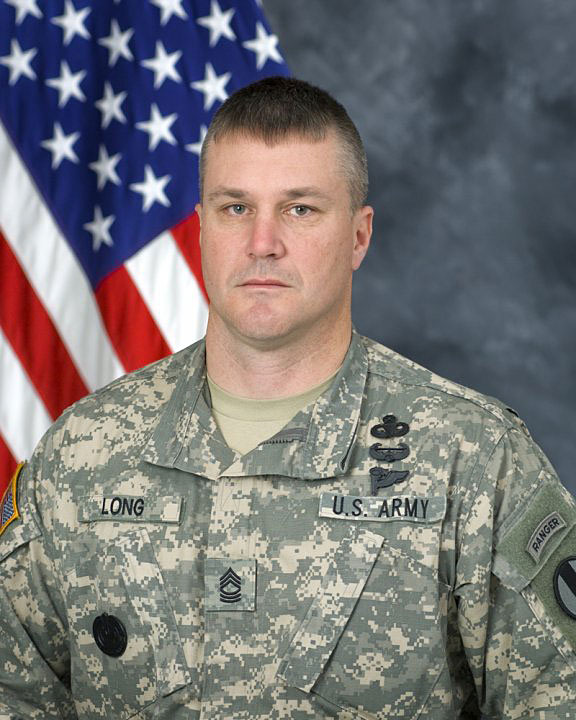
Tony Long served in the U.S. Army for 23 years and was an Army 1st sergeant. The opportunities that he found with the Army prepared him for his life in government service, and provided him with the skills he needed to succeed. Today, Long works in the Southwest Region's Division of Diversity and Civil Rights and is an advocate for veterans. “I’m proud to say this is a very veteran friendly organization,” Long shared. “Veterans are very well-received, and there are a lot of opportunities to succeed here, while doing something that benefits this great conservation agency.”